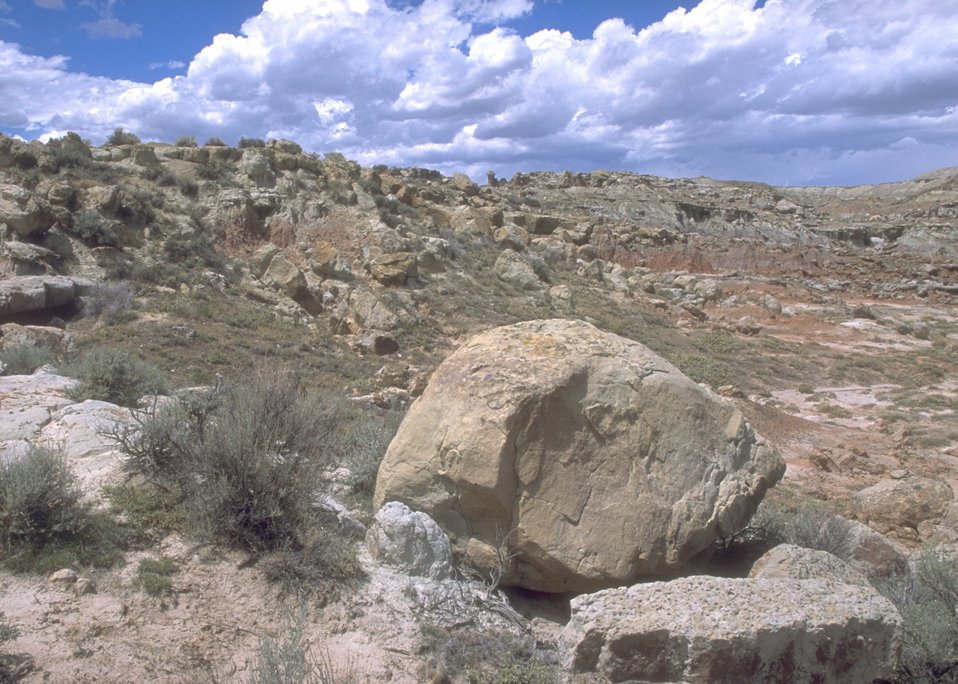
View of Honeycomb WSA, Worland Field Office.